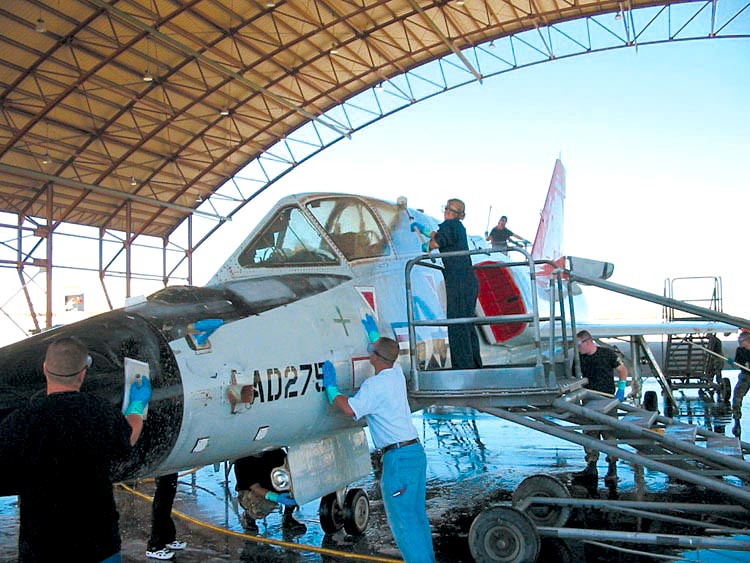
F-106

EDWARDS AIR FORCE BASE, Calfi. (AFPN) -- Volunteers scrub an F-106 Delta Dart in preparation for restoration. The jet was displayed at the open house and air show, and will eventually be part of a century series fighter display here at the West Gate.